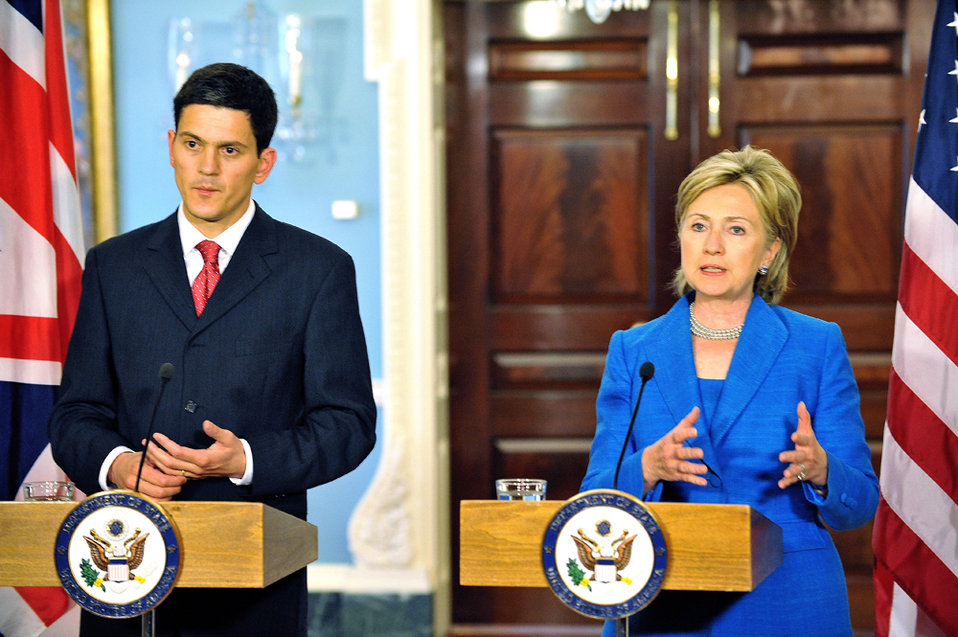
Secretary Clinton Meets With U.K. Foreign Minister

U.S. Secretary of State Hillary Rodham Clinton participates in joint press availability with The Right Honorable David Miliband, M.P., Secretary of State for Foreign and Commonwealth Affairs of the United Kingdom of Great Britain and Northern Ireland, in the Treaty Room of the U.S. Department of State in Washington, DC July 29, 2009.